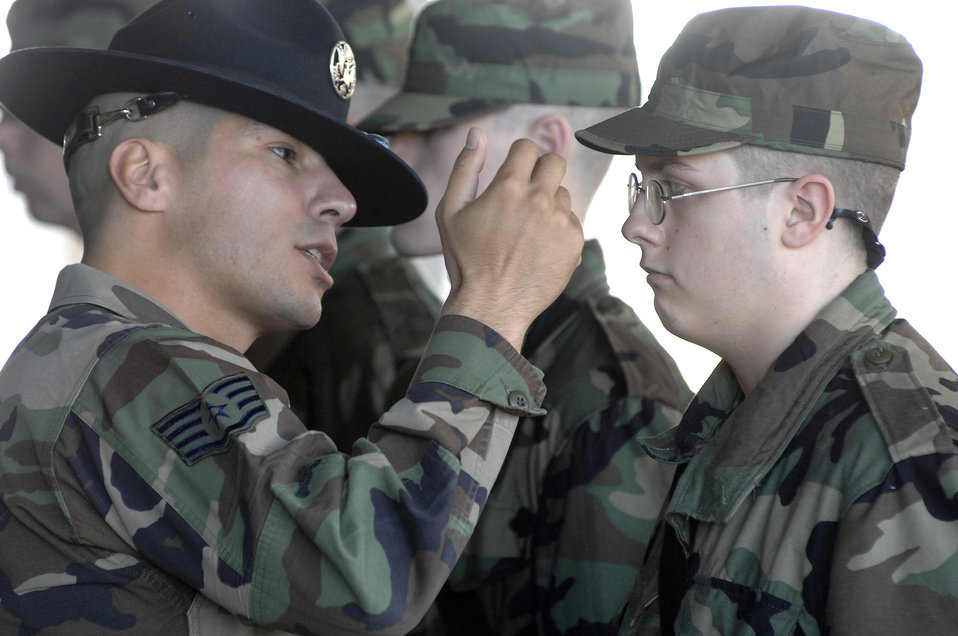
Drill correction

Staff Sgt. Jacob Chavez corrects a trainee during a drill practice Dec. 27 at the 322nd Training Squadron at Lackland Air Force Base, Texas. Sergeant Chavez is a military training instructor who is spending his holidays training new Airmen.